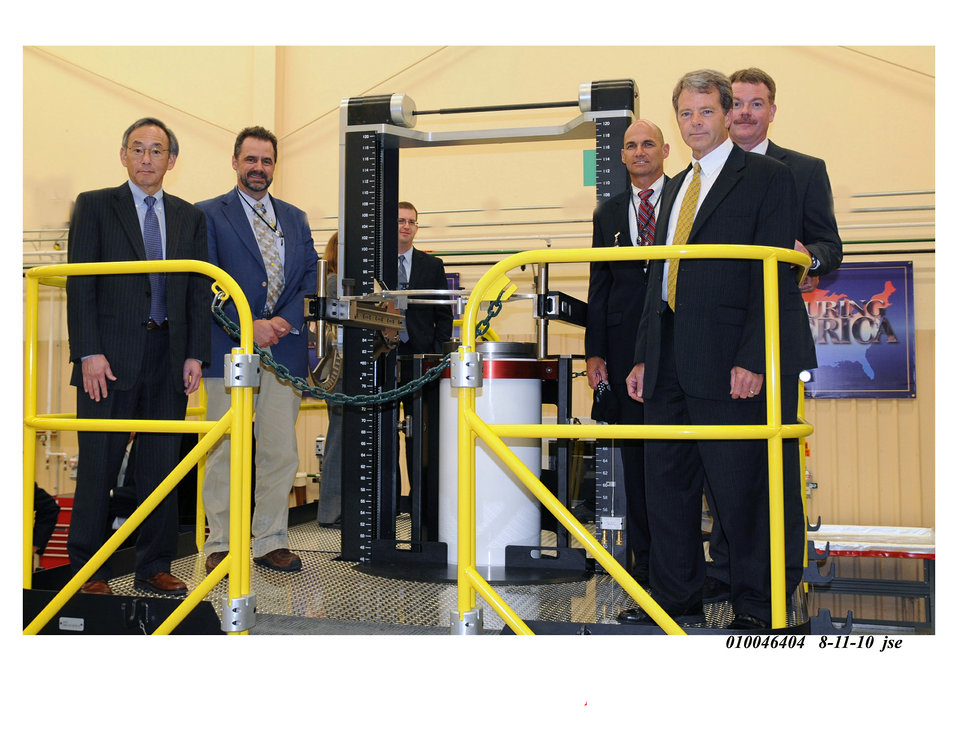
Pantex Plant manager Steve Erhart briefs Secretary Chu and NNSA Administrator Thomas D’Agostino on special tools developed for NNSA’s life extension and dismantlement programs during a visit to NNSA’s Pantex Plant. (Aug. 11, 2010)